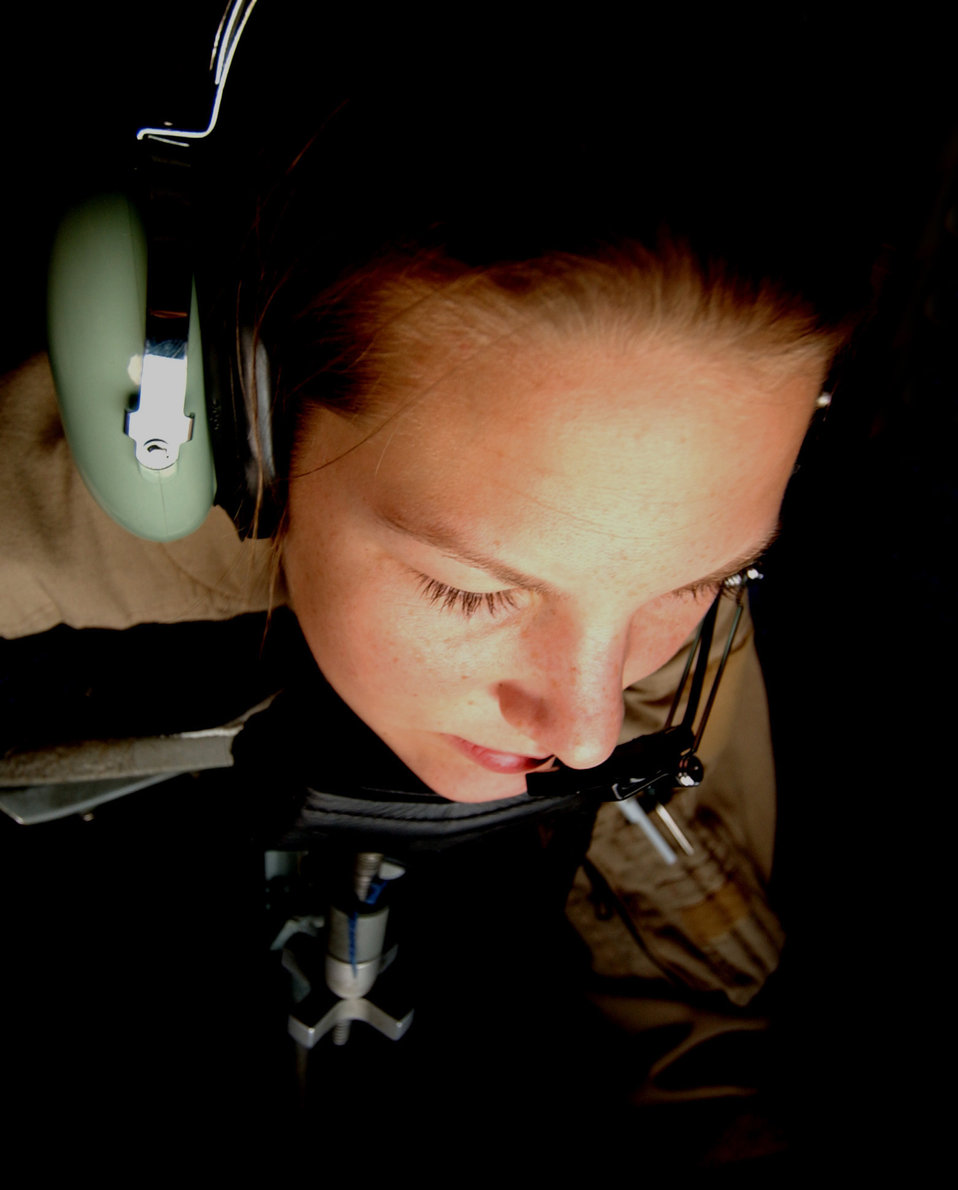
Waiting patiently

OVER SOUTHWEST ASIA -- Senior Airman Jennifer Oeser waits to receive an aircraft during a combat sortie supporting Operation Iraqi Freedom here recently. Airman Oeser is a KC-135 Stratotanker boom operator with the 340th Expeditionary Air Refueling Squadron.